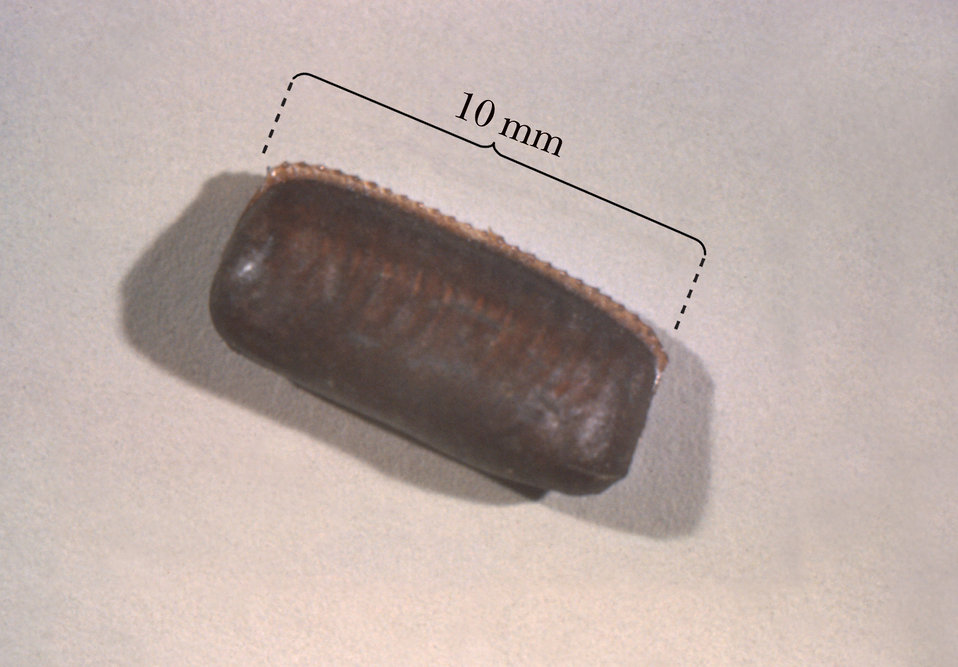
This photograph of a cockroach egg capsule was taken during a 1972 study of disease carriers, and pests of migrant labor camps.